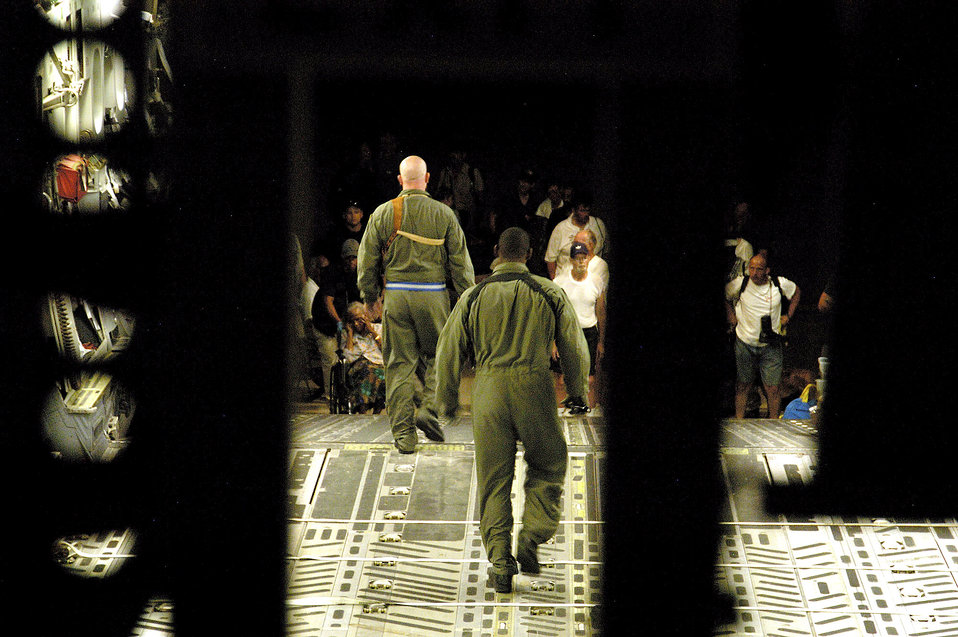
Humanitarian mission

LOUIS ARMSTRONG NEW ORLEANS INTERNATIONAL AIRPORT, La. -- Airmen prepare to bring evacuees from New Orleans aboard a C-17 Globemaster III aircraft. More than 140 evacuees, who are victims of flooding caused by Hurricane Katrina, were evacuated to Austin, Texas.